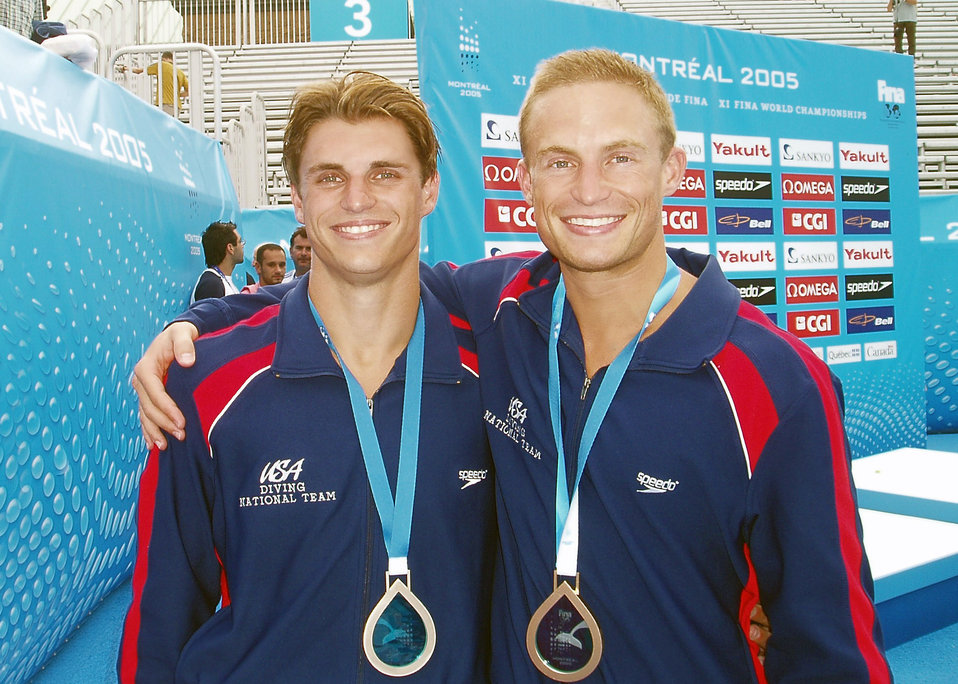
Diver trades swim suit for flight suit

Brothers Troy (left) and Justin Dumais were Olympic divers and medal winners . Justin Dumais, now a lieutenant in the South Carolina Air National Guard, gave up his diving aspirations to become an Air Force pilot. Currently, he is an F-16 Fighting Falcon student pilot at Luke Air Force Base, Arizona.